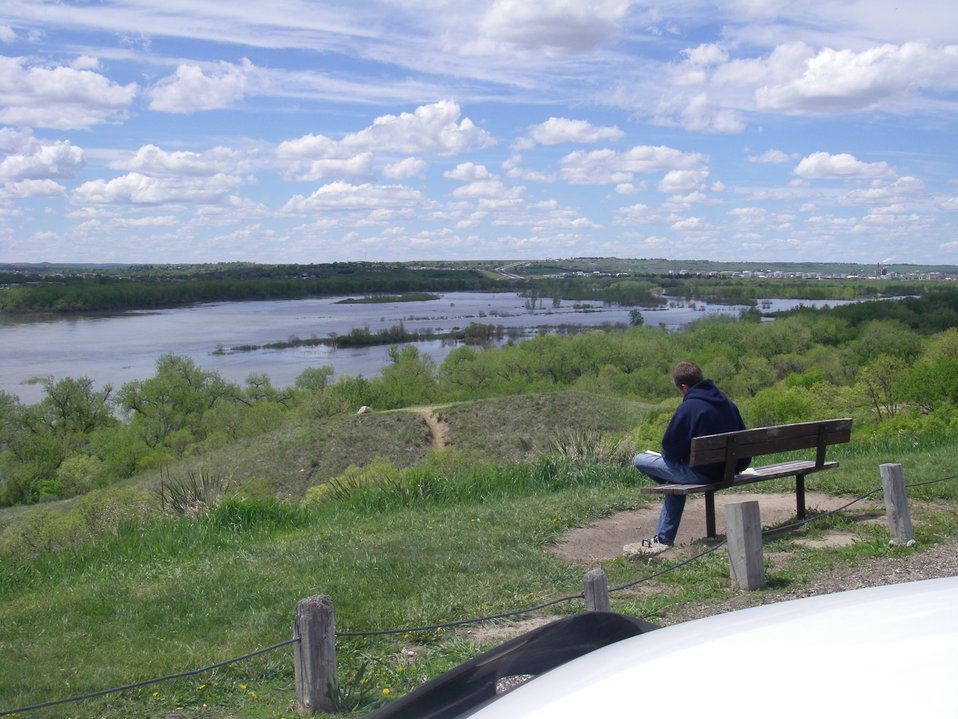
Rising Water on the Missouri River

As the Missouri river continues to rise, the U.S. Fish and Wildlife Service and other partners volunteer to fill sand bags and take other preemptive measures to protect lives and property below Garrison Dam in the Bismarck/Mandan area in North Dakota. With planned releases from the dam expected to nearly double the river’s flow in the next two weeks, more flooding is expected.